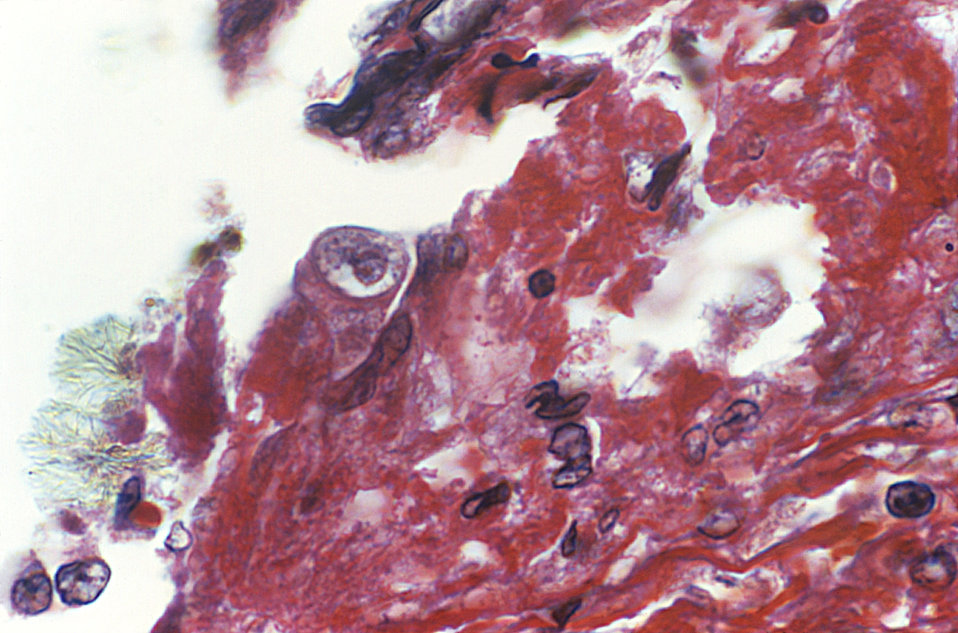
Magnified 1000X, this photomicrograph revealed the presence of Acanthamoeba polyphaga parasitic microorganisms, which were found in a specimen of human trichrome-stained corneal tissue.